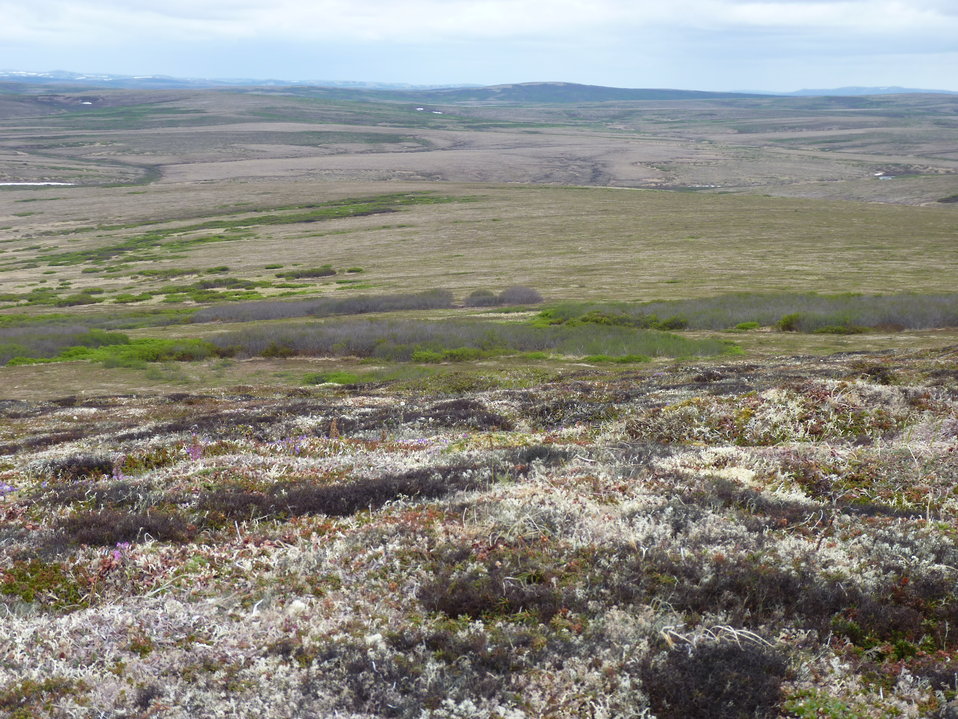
Andreafsky Wilderness, Yukon Delta National Wildlife Refuge